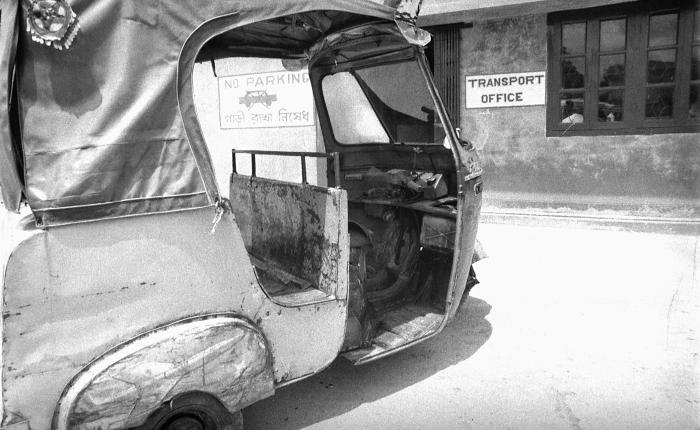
This photograph depicted a 'baby taxi' used to transport Bangladesh commuters inside, and from town to town. This photograph provided by Dr. Stan Foster, and captured by Pierre Claquin, M.D., B.A.C., who at the time was a member of the World Health Organization's Smallpox Eradication Program. It was part of a series photographed by former E.I.S. officer, Stanley O. Foster M.D., M.P.H., and was one of a series entitled 'The Story of One Smallpox Jeep', which depicted the travails faced by the jeep, and its occupants of public health practitioners, as they road through the Bangladesh countryside in an attempt to eradicate smallpox from the country.